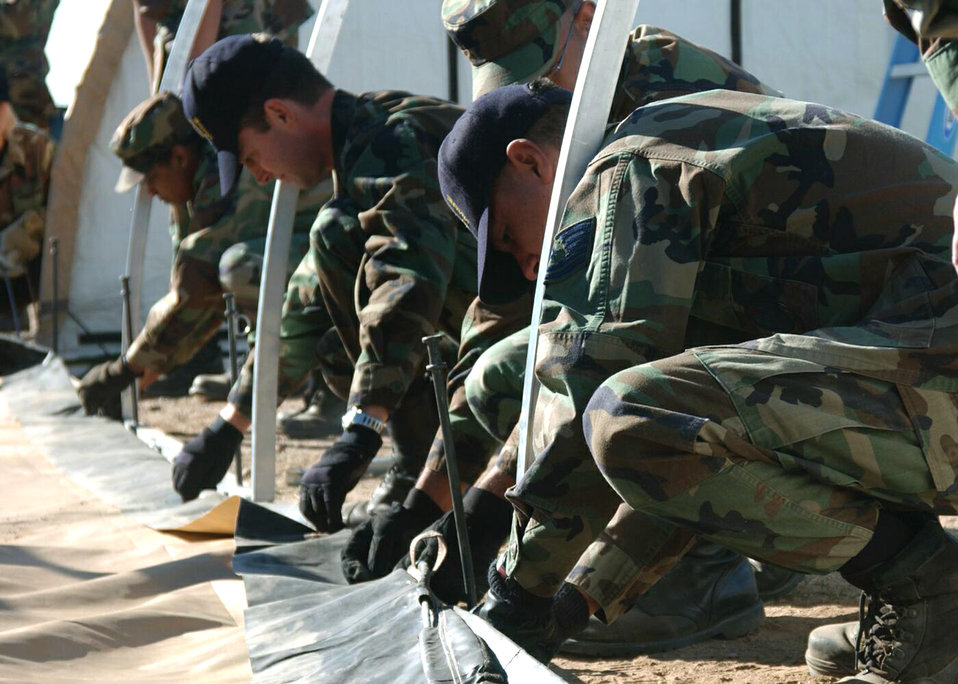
A tents situation

DAVIS-MONTHAN AIR FORCE BASE, Ariz. -- Airmen from the 355th Medical Support Squadron gather a side of a tent as they prepare to erect an Alaskan shelter that is used for patient care in deployable situations. The Airmen train like this quarterly to prepare for deployment.